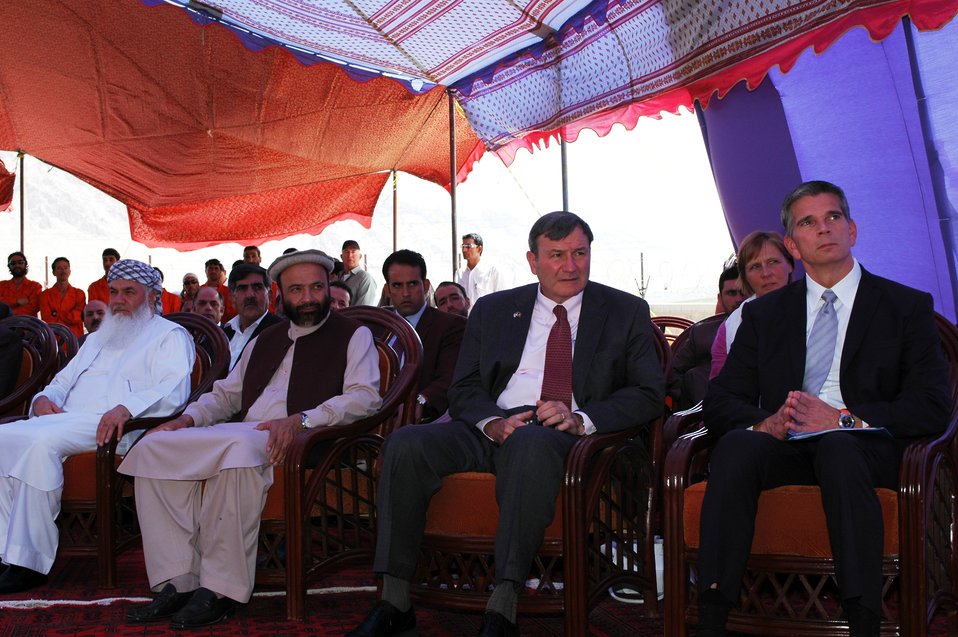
105 MW Tarakhil Power Plant Handover